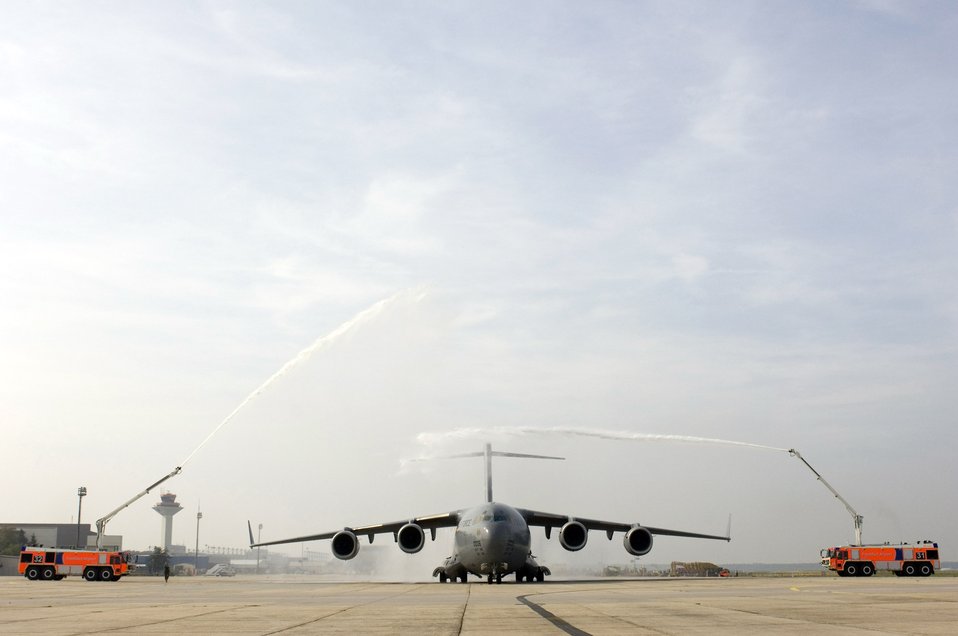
Airlift honored

RHEIN-MAIN AIR BASE, Germany -- A C-17 Globemaster III, christened the